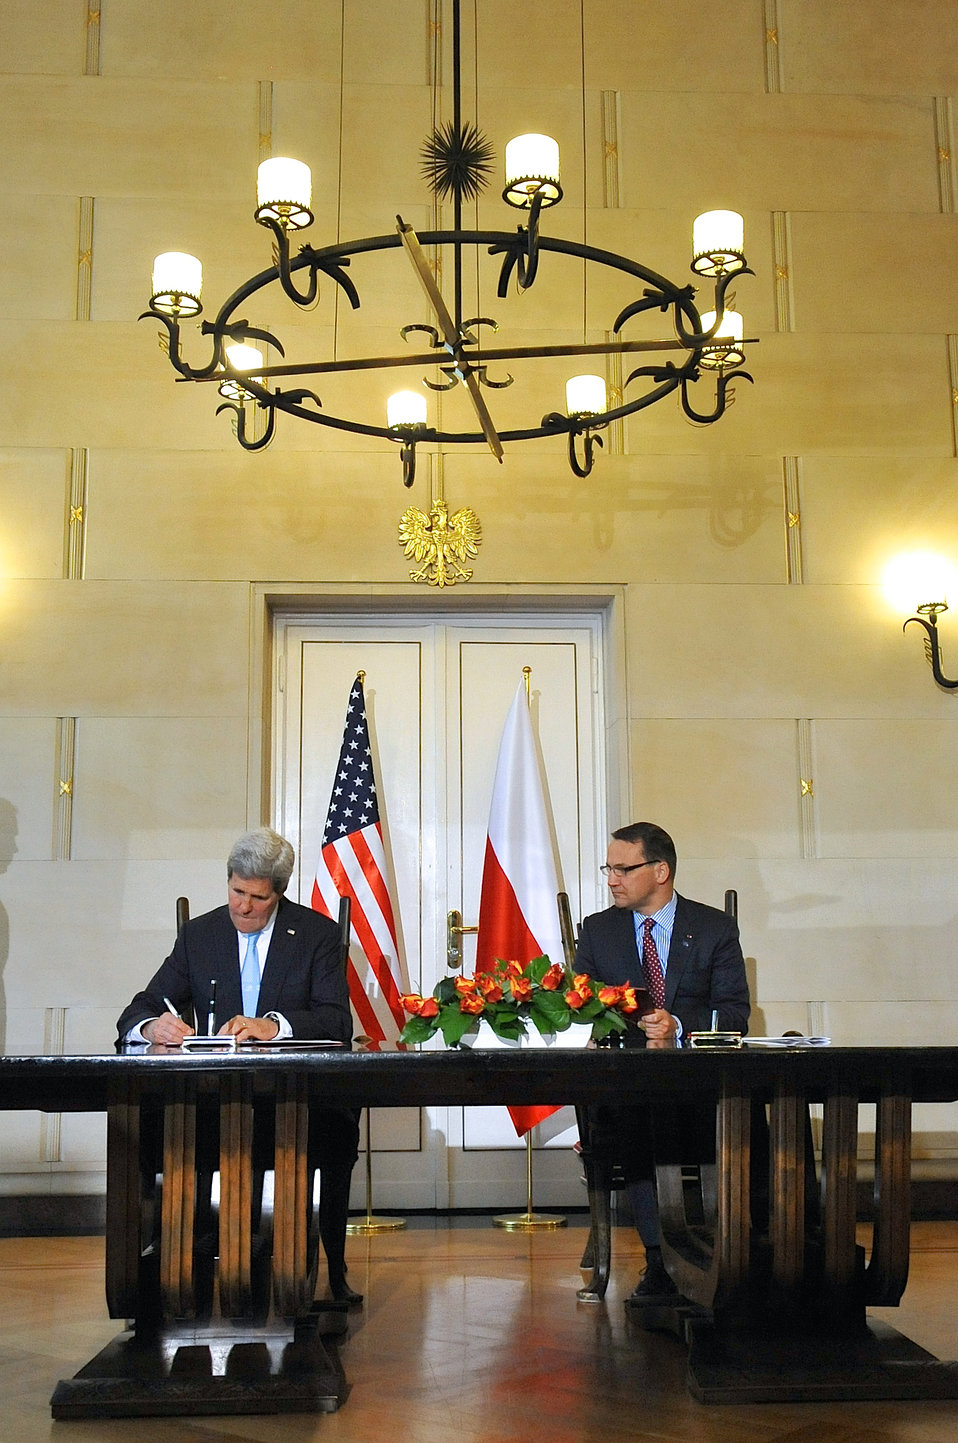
Secretary Kerry, Polish Foreign Minister Sikorski Sign Innovation Framework Agreement

Polish Foreign Minister Radislow Sikorski waits as U.S. Secretary of State John Kerry finishes signing an Innovation Framework Agreement in advance of President Obama's visit to Warsaw on June 3, 2014.